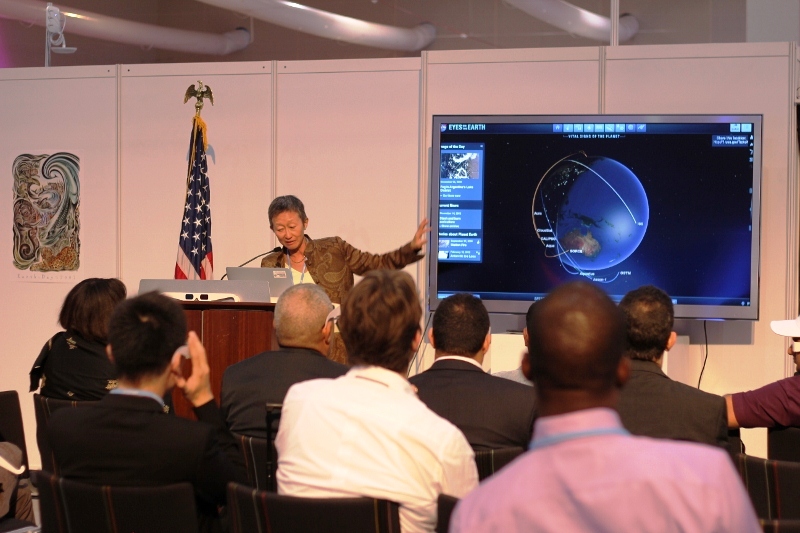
A U.S. Government Leader Presents at the U.S. Center

A U.S. Government leader highlights key climate programs and scientific research during her presentation at the U.S. Center at the 18th Session of the Conference of the Parties to the UN Framework Convention on Climate Change (COP-18) in Doha, Qatar, November 27, 2012.